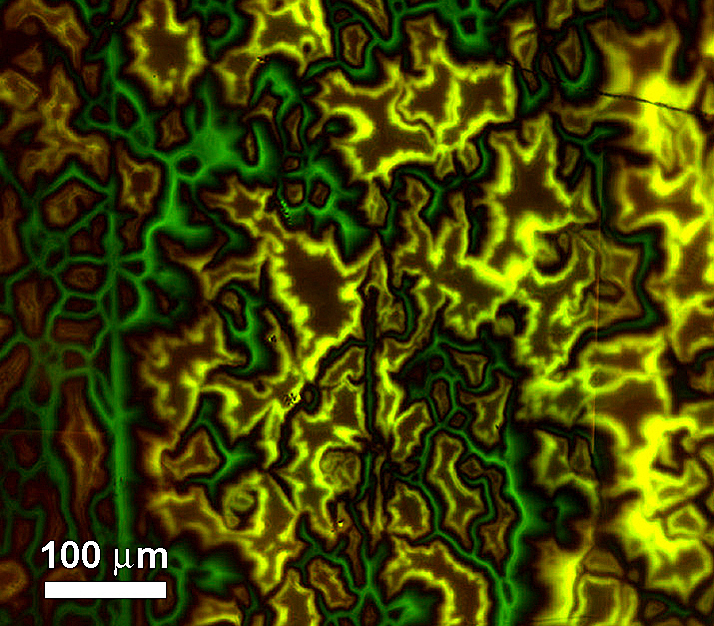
Electrically Connected Grains

Magneto-optical image of magnetic fields within a YBCO superconductor showing electrically connected grains (yellow) and grain boundaries (green) that form barriers to superconducting currents. The large reversible effect of strain observed by NIST might be due to associated changes in grain boundaries, which raise the barriers to current flow and lower the material's current-carrying capability.

Learn more at www.nist.gov/public affairs/techbeat/tb2007 0215.htm#htc.

Credit: D.C. van der Laan/NIST and J. Schwartz, NHMFL-FSU